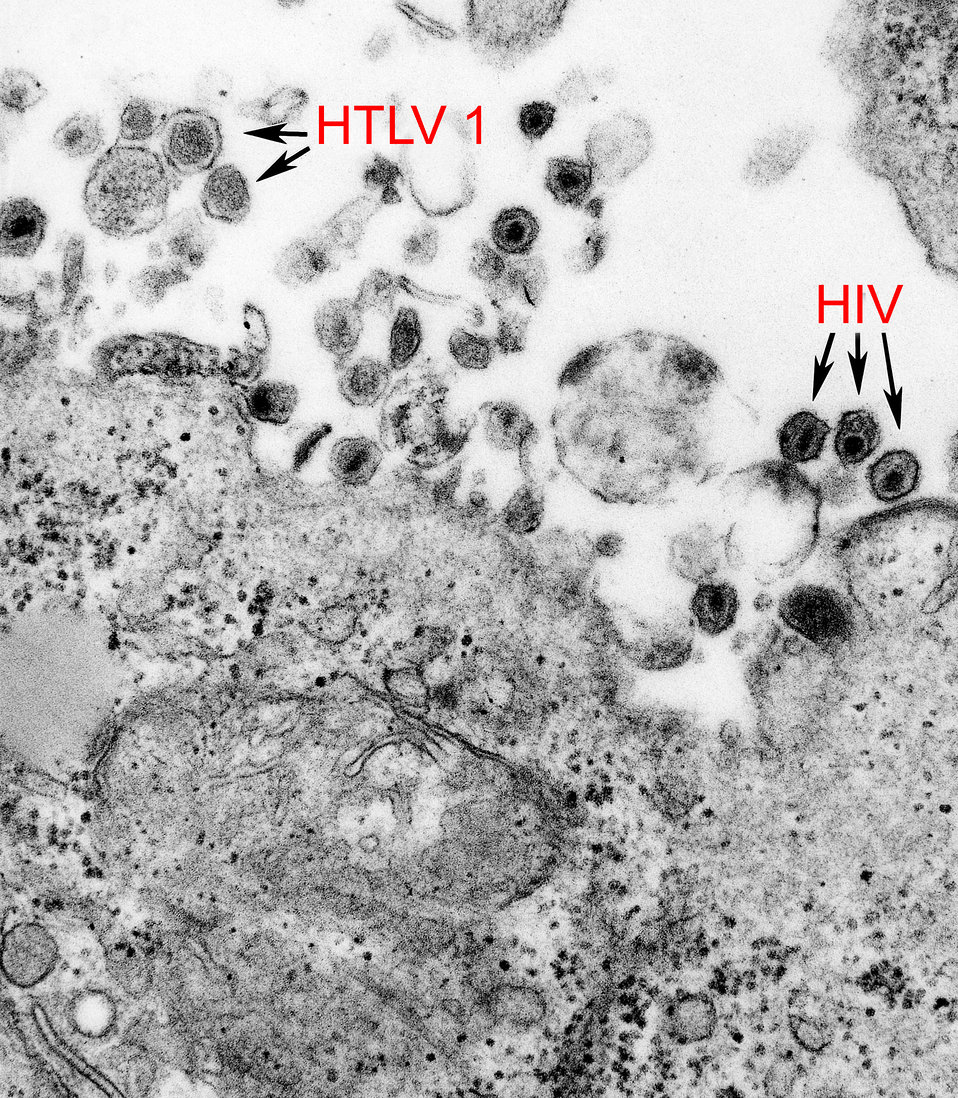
This image revealed the presence of both the human T-cell leukemia type-1 virus (HTLV-1), (also known as the human T lymphotropic virus type-1 virus), and the human immunodeficiency virus (HIV).